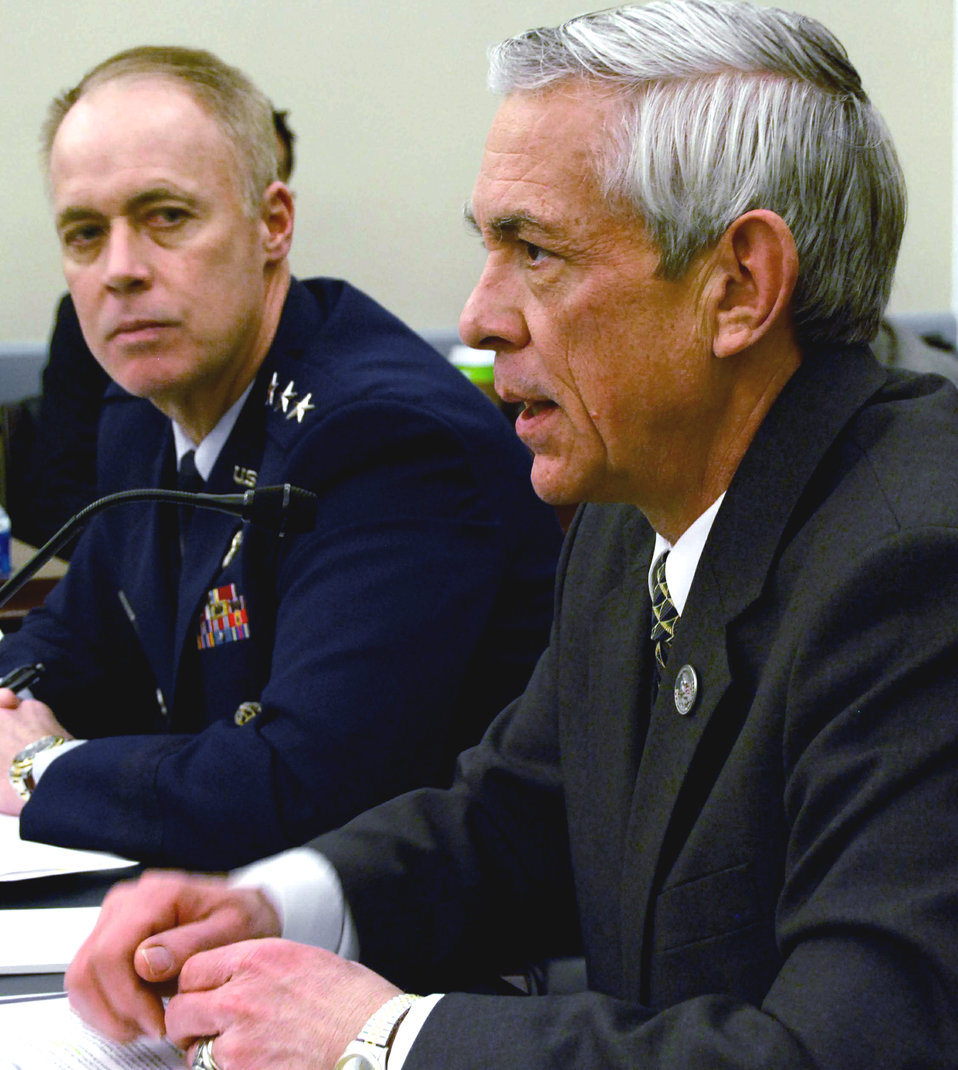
AF personnel leaders focus on warrior well-being, modernization

Craig Duehring, assistant Secretary of the Air Force, manpower and Reserve affairs, and Lt. Gen. Richard Y. Newton III, the Air Force deputy chief of staff for manpower, personnel and services, answer questions from members of House Appropriations Defense Subcommittee in Washington March 17.